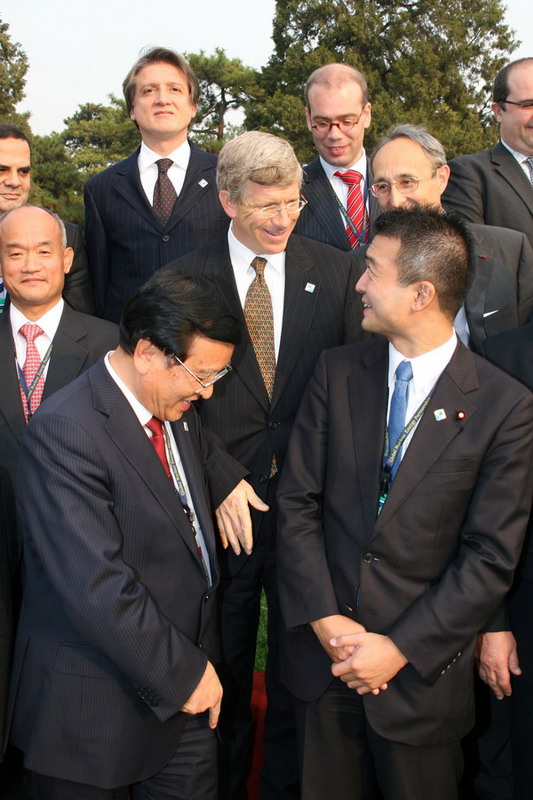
Deputy Secretary Poneman joins officials from numerous countries at the GNEP Meeting.